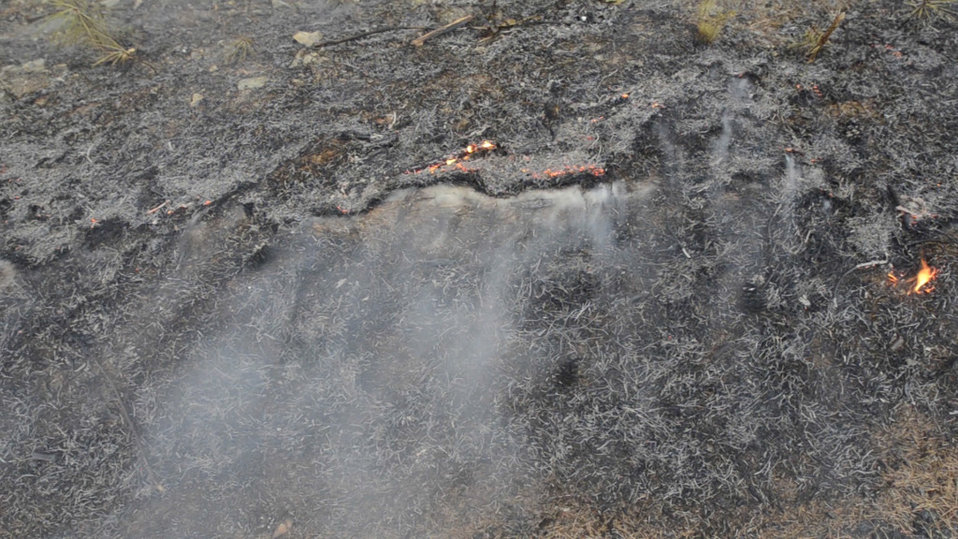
Geronimo Interagency Hotshot Crew, Department of the Interior (DOI) Indian Affairs (IA) Bureau of Indian Affairs (BIA) San Carlos Agency in Arizona; on assignment at the Big Windy Complex Wildlands Fire, approximately 15 miles west of Interstate-5 and East Northeast of Galice, Oregon, conducts a prescribed burn 'burnout' operation to help stop the main fire that may head toward this roadway, on Friday, Aug 9, 2013. The primary mission of the Interagency Hotshot Crews (IHC) is to provide a safe, organized, mobile and highly skilled hand crew for all phases of wildland fire suppression. The arduous duties and specialized assignments required of IHC personnel require uniform staffing, certification, training, equipment, communications, transportation, organization, and qualifications that adhere to interagency standards and guidelines.